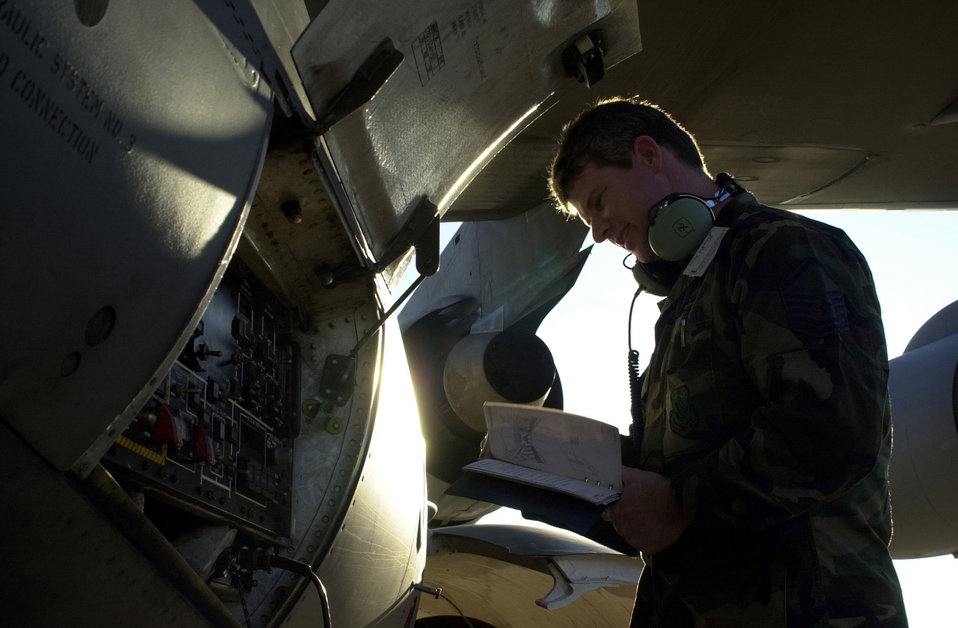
Faires

OPERATION ENDURING FREEDOM -- Master Sgt. Dave Faires, a fuels specialist from Moron Air Base, Spain, monitors fuel being added to a C-17A Globemaster III at an operating location in support of Operation Enduring Freedom on Nov. 28. The C-17 has an unrefueled range of about 2,400 nautical miles.